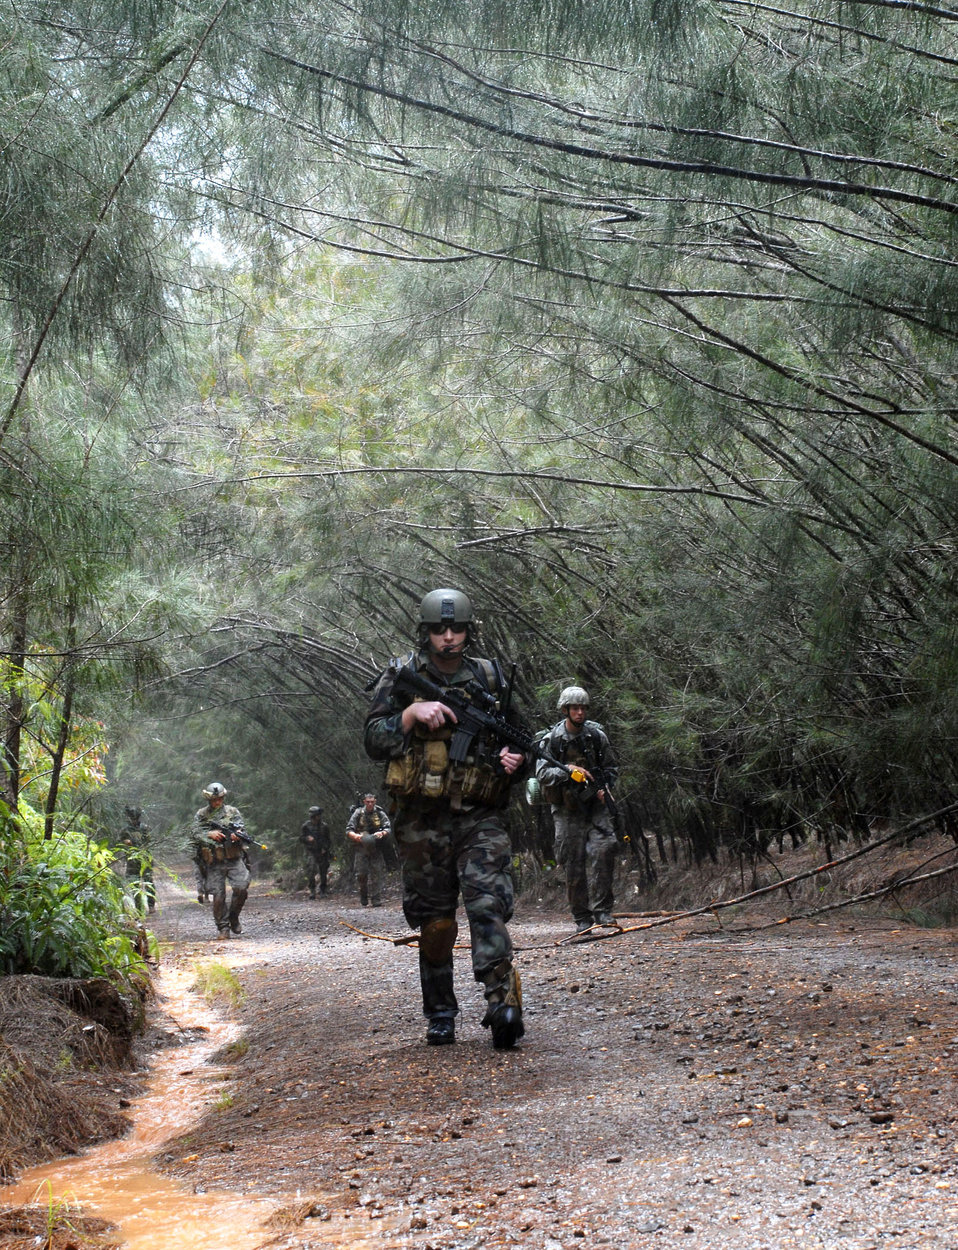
Follow me ...

Tactical air control party Airmen hike at Wheeler Army Airfield's East Range near Hickam Air Force Base, Hawaii, to sharpen proficiencies necessary for upgrade training. When deployed, these TACP volunteers are responsible for calling in close-air support and providing clearance for air assaults to ensure the right targets are reached.